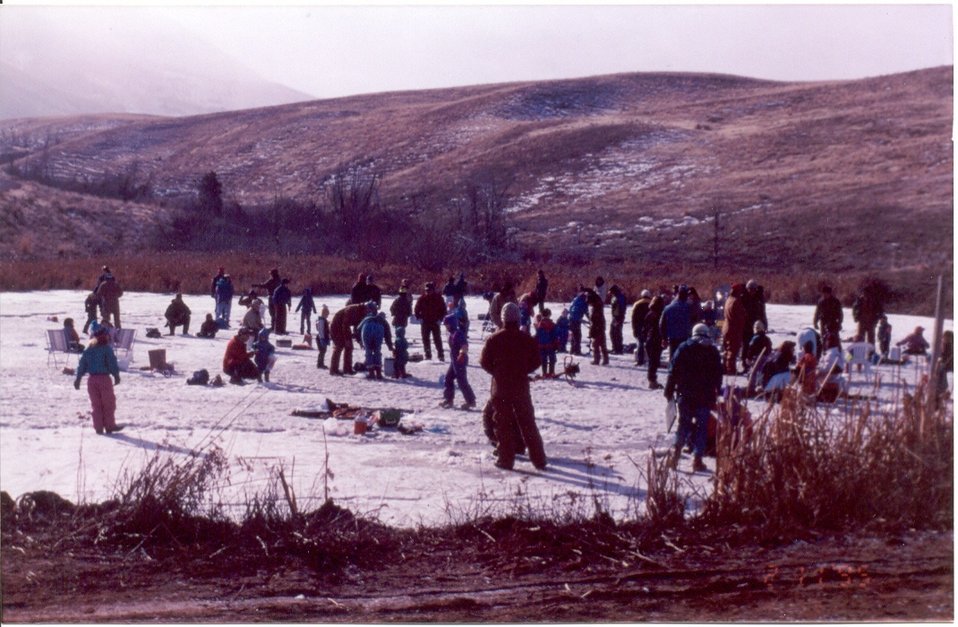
Ice Fishing Derby Salmon Idaho Salmon Field Office UCSC Upper Columbia Salmon Clearwater District